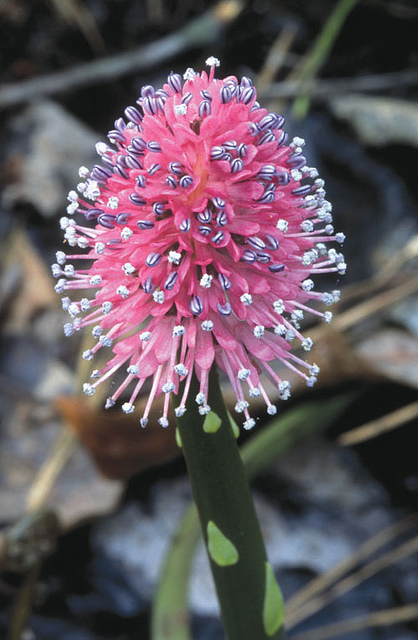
swamp pink

New Jersey